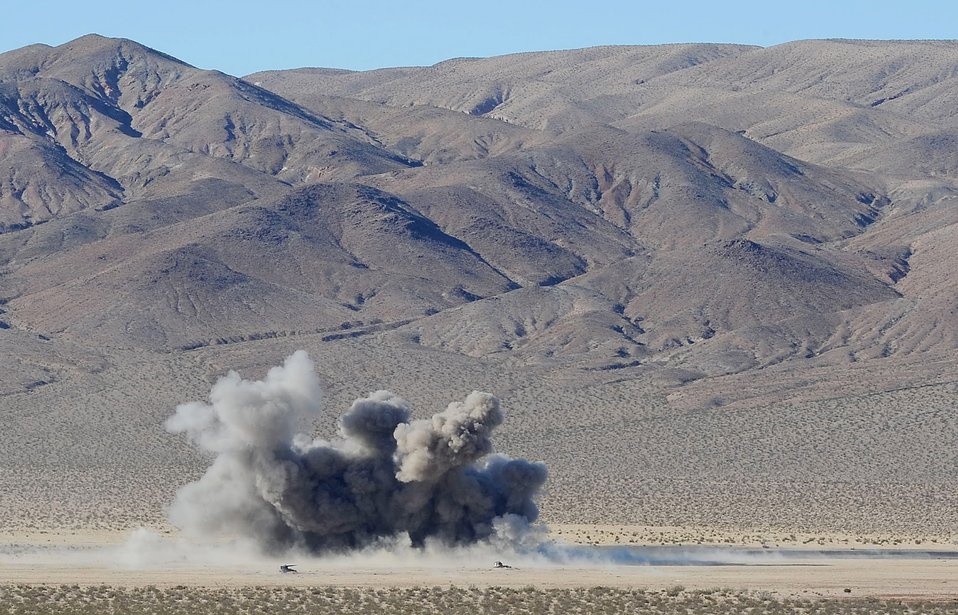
Combat training scenario

At the direction of the 12th Combat Training Squadron Airmen, an F-15 Eagle drops live ordnance Nov. 1, 2010, at the training range on Fort Irwin, Calif.